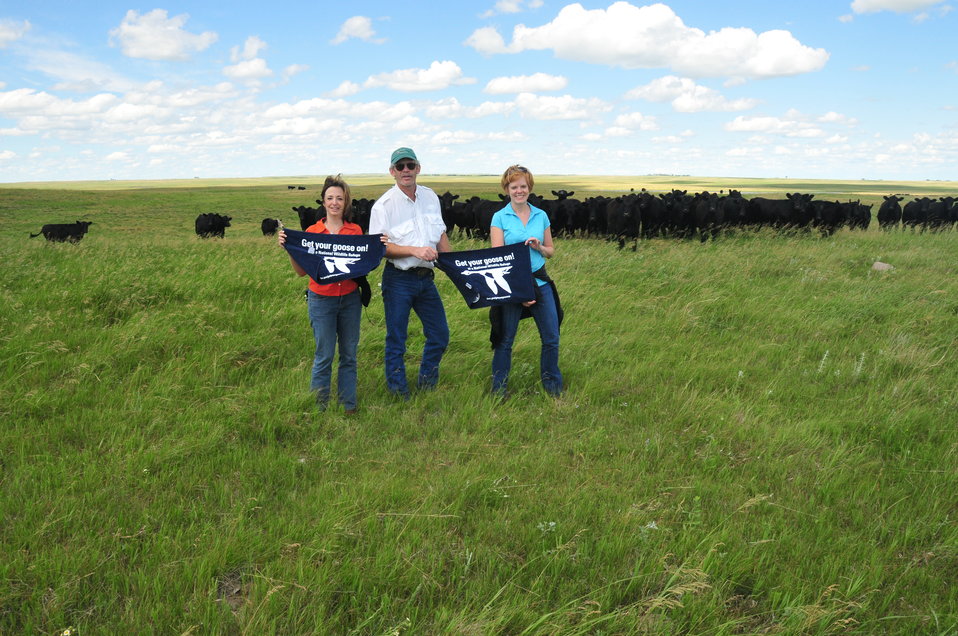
Get Your Goose On!

The national meeting for regional chiefs of the National Wildlife Refuge System is held three times a year in different locations around the country. This 2012 meeting took place in McPherson County, South Dakota, and focused on the Dakota Grassland Conservation Area.

This photo was taken on the Wade Weiszharr and Family Ranch, which contains perpetual U.S. Fish and Widlife grassland and wetland easements. This site is also located in the heart of Prairie Pothole Region, making it extremely productive migratory bird habitat and a great place to “Get your goose on!”

Marsha Pradines, Mark Chase and Serena Selboe 'get their goose on' while a herd of cattle graze the unique grasslands of the Wade Weiszharr Family Ranch behind them.